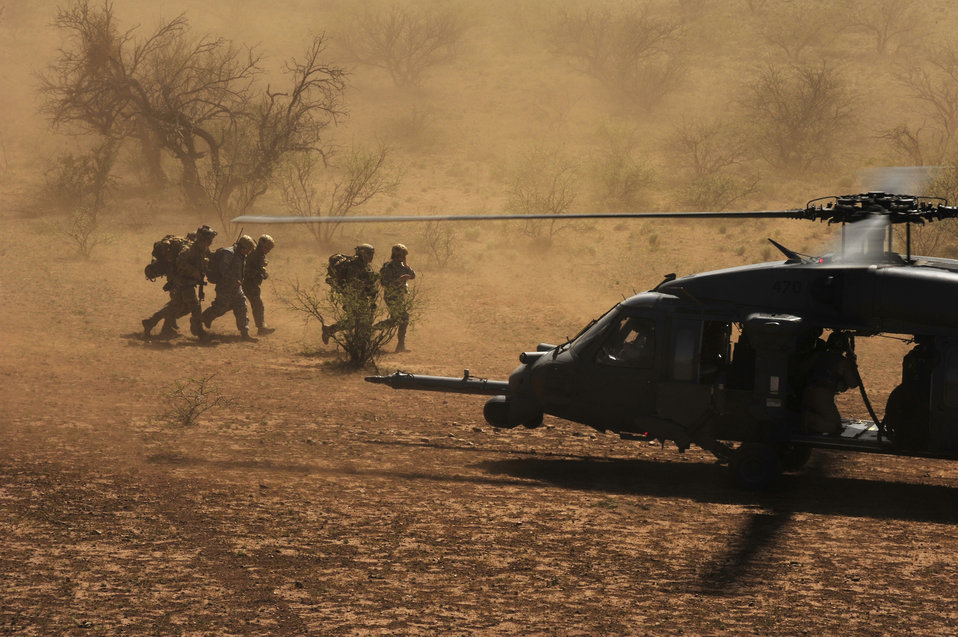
Angel Thunder 2010

An HH-60 Pave Hawk picks up pararescuemen and three